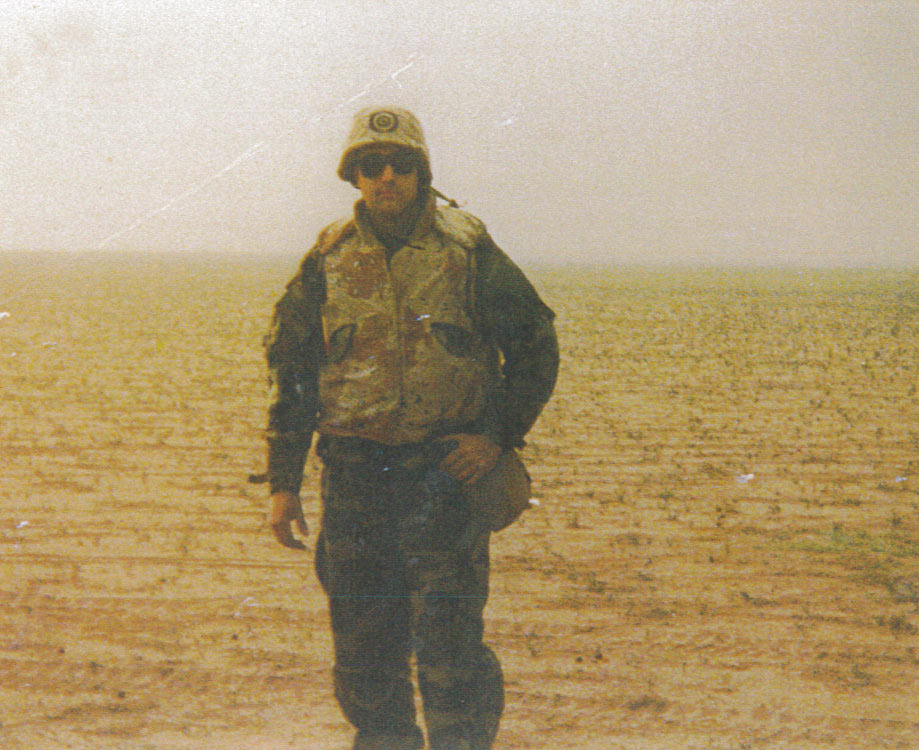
Craig Bockholt--Mountain-Prairie Region

Craig Bockholt, the Assistant Project Leader at Gavins Point National Fish Hatchery in South Dakota, served in the Marine Corps from 1987 to 1991, including Desert Shield and Desert Storm.